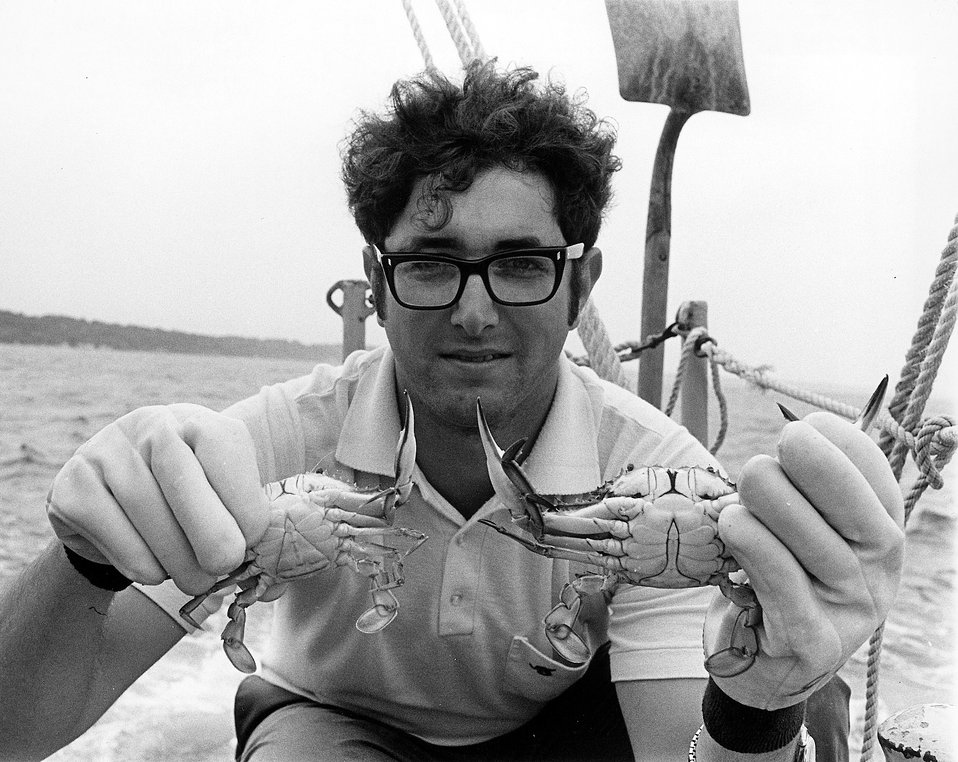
Male and female Maryland Blue Crab, one of the vital food resources of the Chesapeake Bay, are being studied by University of Maryland scientists as part of an Atomic Energy Commission supported research project to monitor the effects of heated water discharged from the Calvert Cliffs nuclear generating plant in Maryland. Circa 1972.